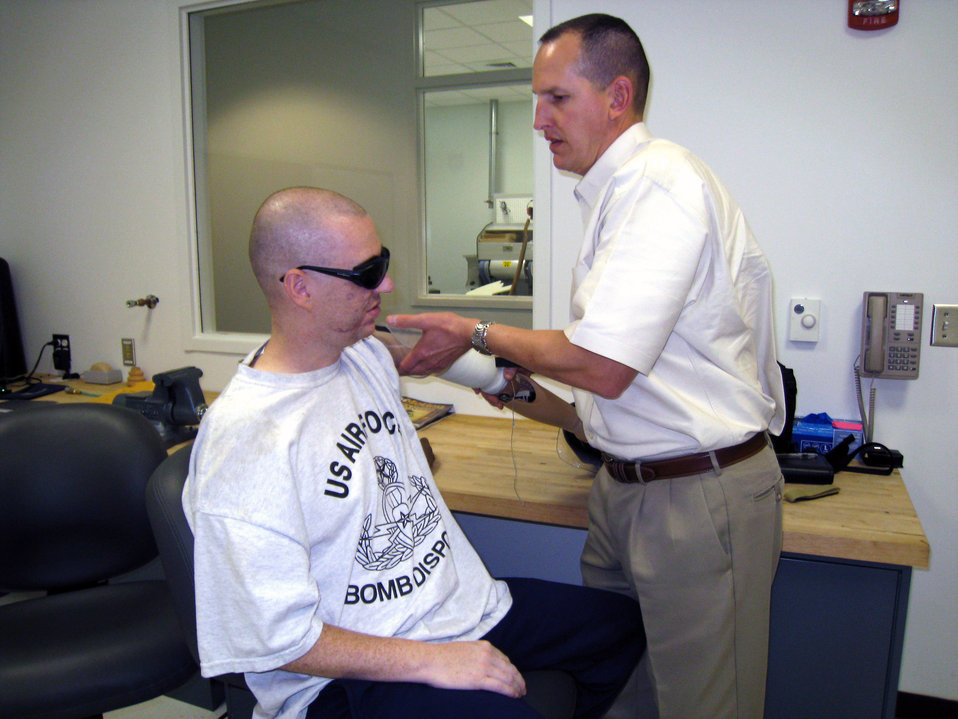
Wounded Warrior: Air Force family helps Purple Heart recipient, wife

Del Lipa, a prosthetist with Brooke Army Medical Center in San Antonio, fits Staff Sgt. Matthew Slaydon with a prosthetic arm in January. Sergeant Slaydon's left arm was amputated above the elbow after a terrorist's bomb exploded while the EOD technician was trying to clear an area in Iraq Oct. 24, 2007.